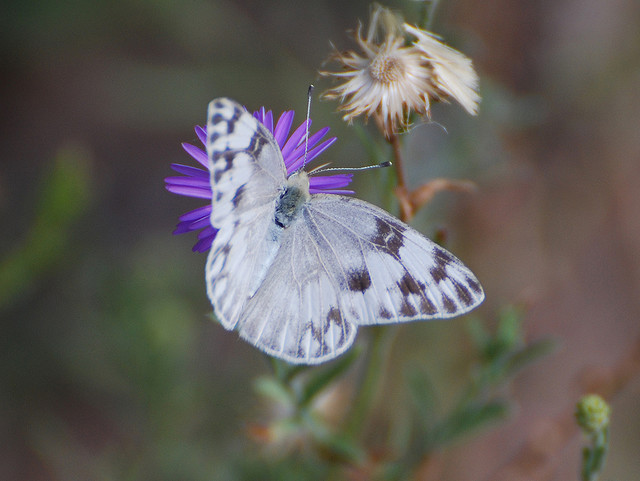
checkered white butterfly

Bosque del Apache NWR, AZ